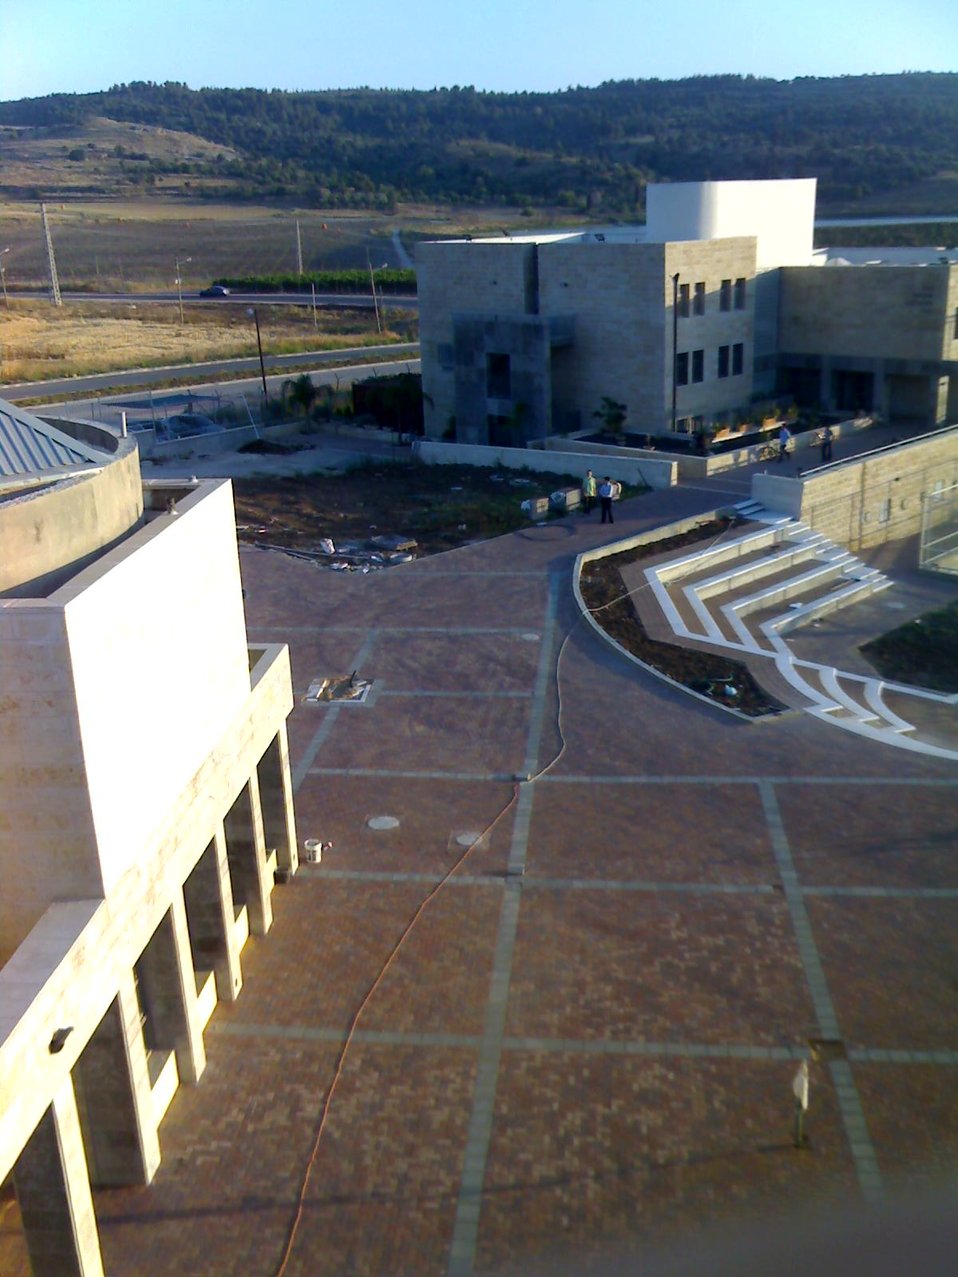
עברית: מראה הקמפוס של ישיבת נהורא